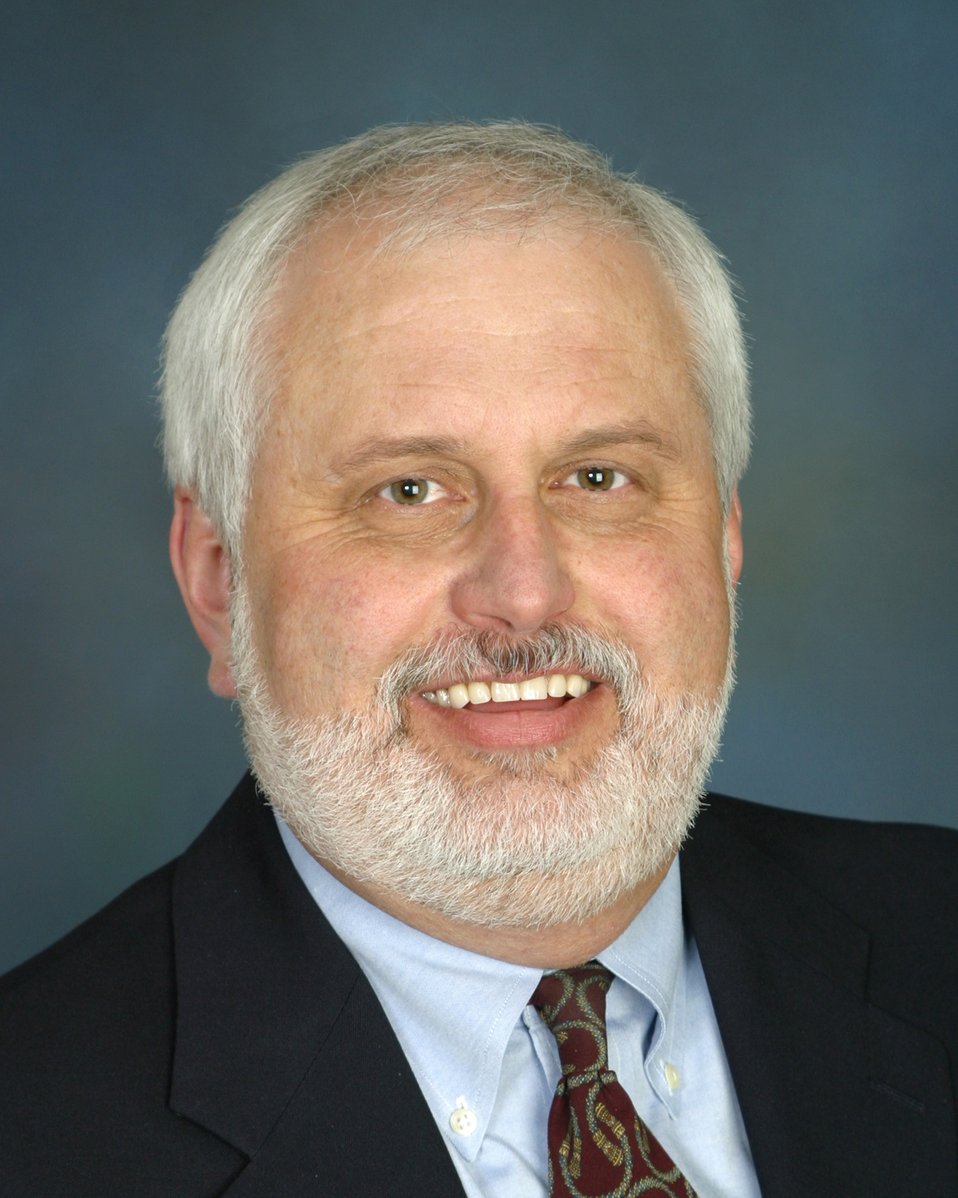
Chuck Wassinger ASD Oregon / Washington State Office